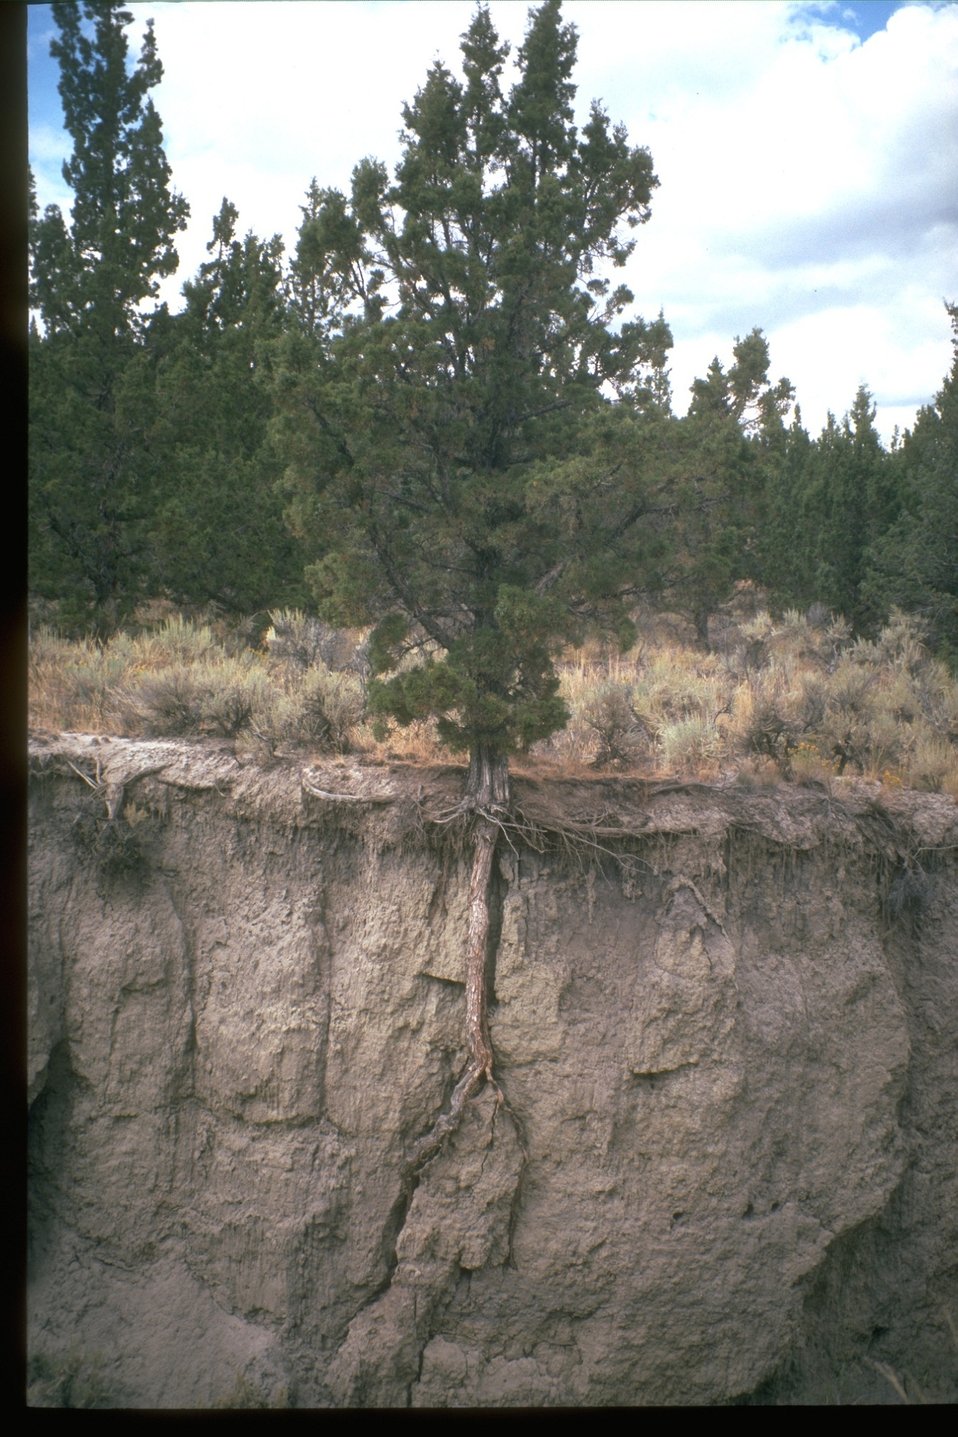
Stream entrenchment showing juniper roots in central Oregon.